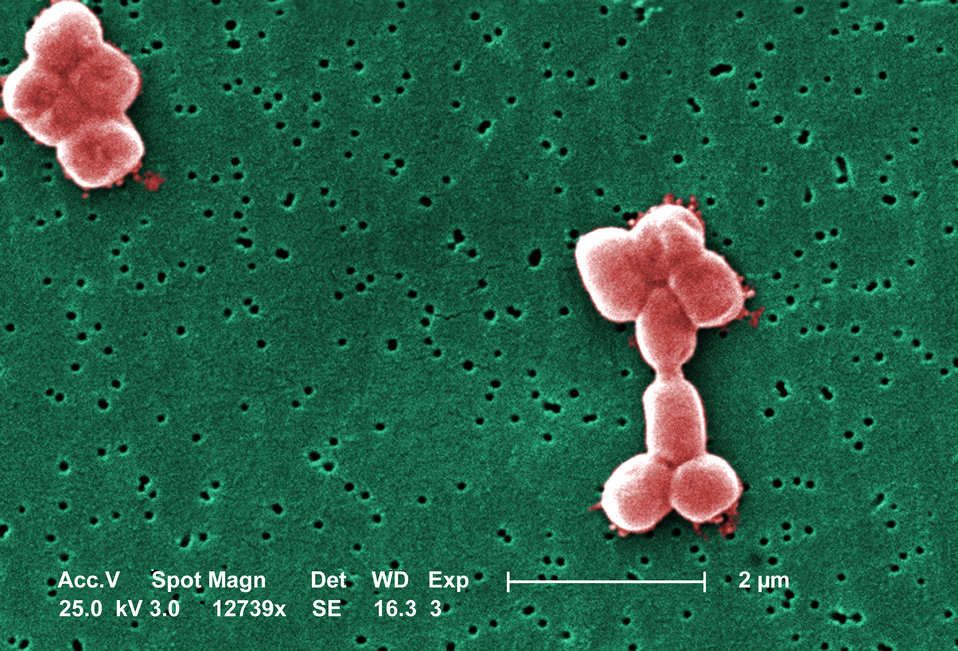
This SEM depicts a couple of clusters of aerobic Gram-negative, non-motile Acinetobacter baumannii bacteria as seen under a magnification of 12,739x. See PHIL 9330 for a black and white version of this image.